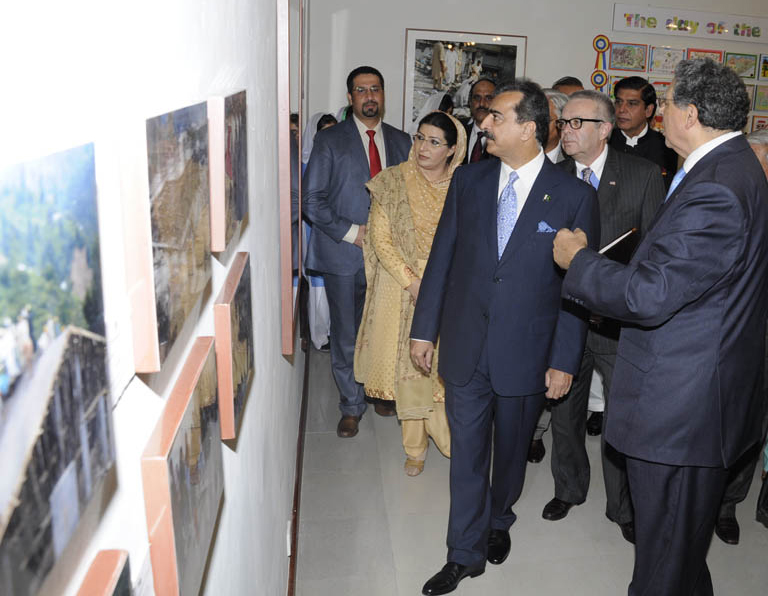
Photography and Drawing Exhibition on Pakistan 2005 Earthquake “Rebuilding Together: With Dignity and Hope”

Syed Yousuf Raza Gilani, Prime Minister of Pakistan along with Dr. Firdous Ashiq Awan, Pakistan Minister for Informtion and Broadcasting and Ambassador Richard Hoagland, Deputy Chief of Mission at U.S. Embassy Islamabad, visit a photo exhibition 'Rebuilding Together: With Dignity and Hope' sponsored by USAID at Pakistan National Council of Arts (PNCA) in Islamabad.